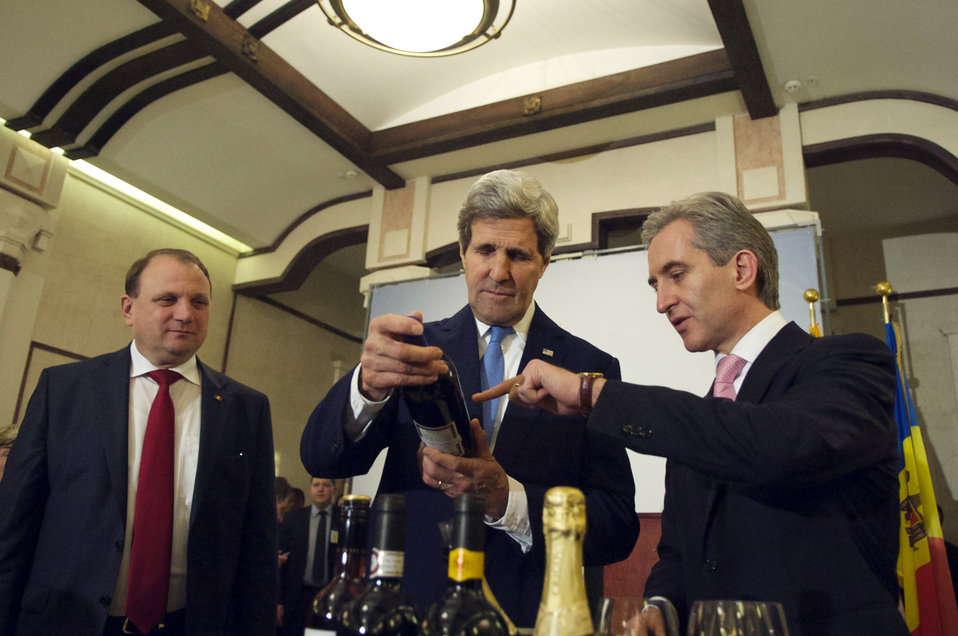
Moldovan Prime Minister Leanca Points Out the Label of a Moldovan Wine

Moldovan Prime Minister Lurie Leanca, right, points out the label of a local wine after he and U.S. Secretary of State John Kerry sampled some local vintages during an economic development event at the Cricova Winery outside Chisinau, Moldova, on December 4, 2013.